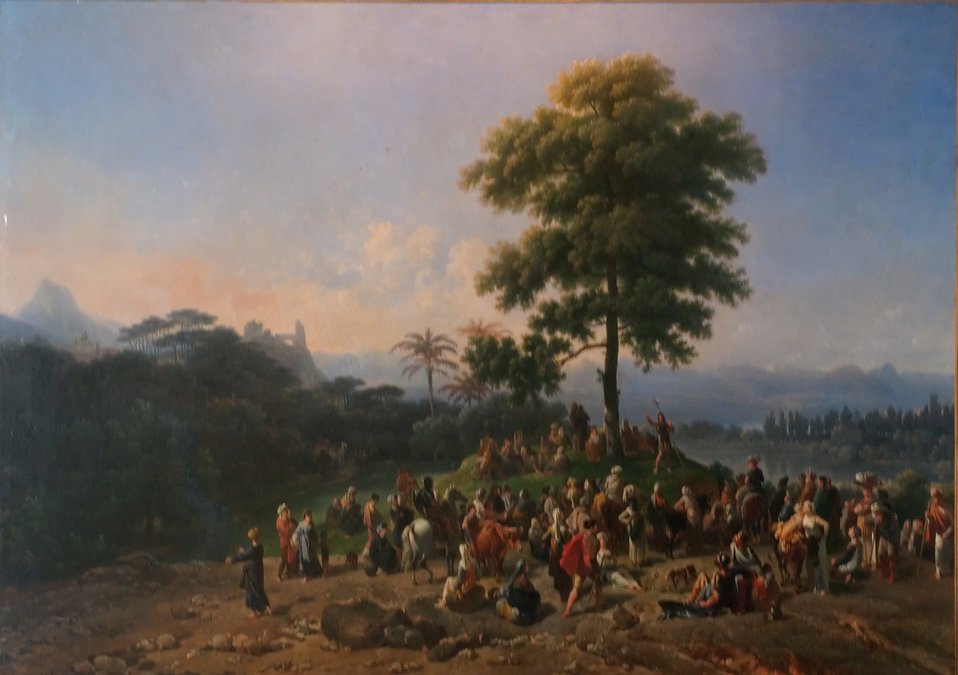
Fran√ßais†: 'Pr√©dication de Saint Jean-Baptiste' de Nicolas-Antoine Taunay